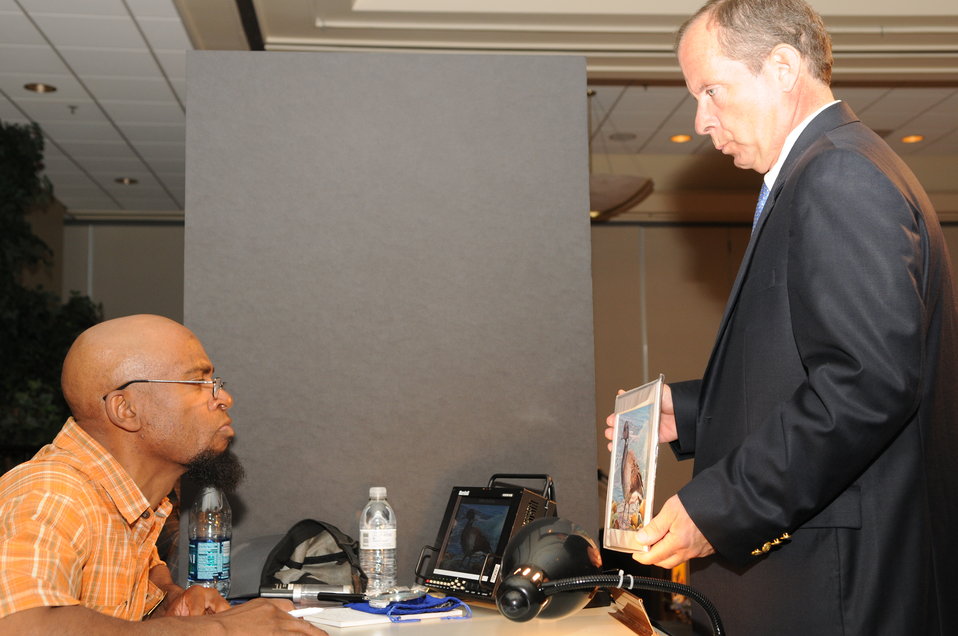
Judging

The U.S. Fish & Wildlife Service sponsored the 2012 Federal Duck Stamp Art Contest September 28 and 29 in Ogden, Utah, at Weber State University. A panel of five judges was responsible for choosing the art work used to design the 2013-2014 Migratory Bird Hunting and Conservation Stamp.